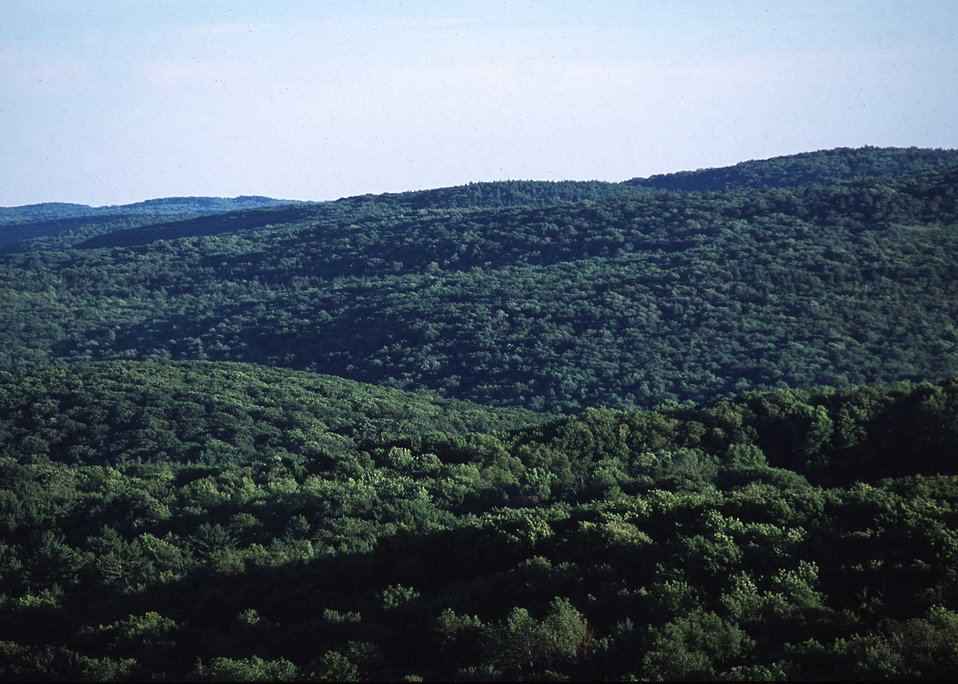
Typical deciduous forestland habitat on the Connecticut landscape.